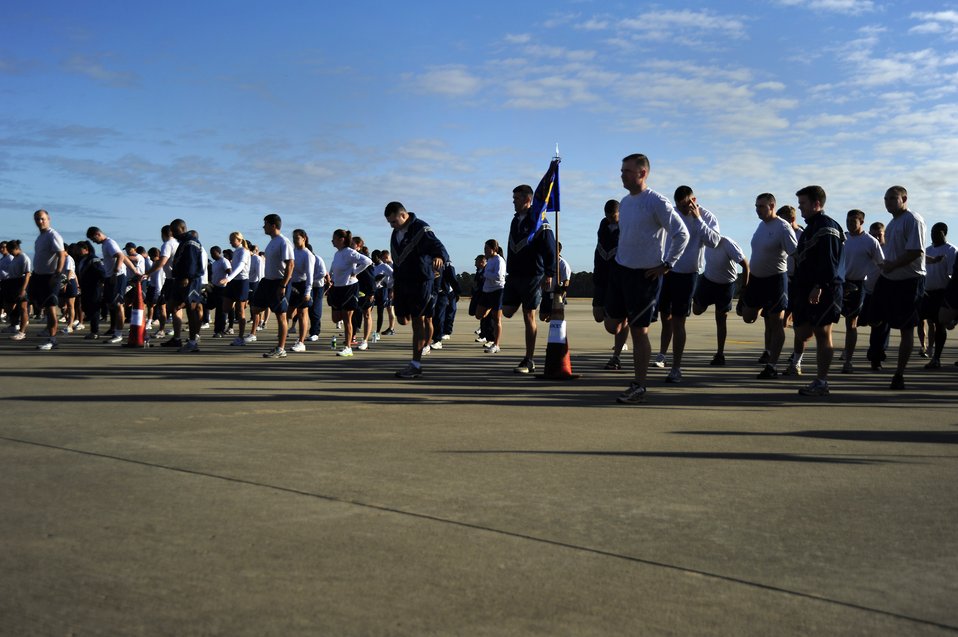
1 SOW Wing Run

U.S. Air Force Airmen stretch prior to the 5 km run, Hurlburt Field, Fla., Nov. 7, 2011. Air Force Special Operations Command Airmen ran in a single formation to support morale and unity.